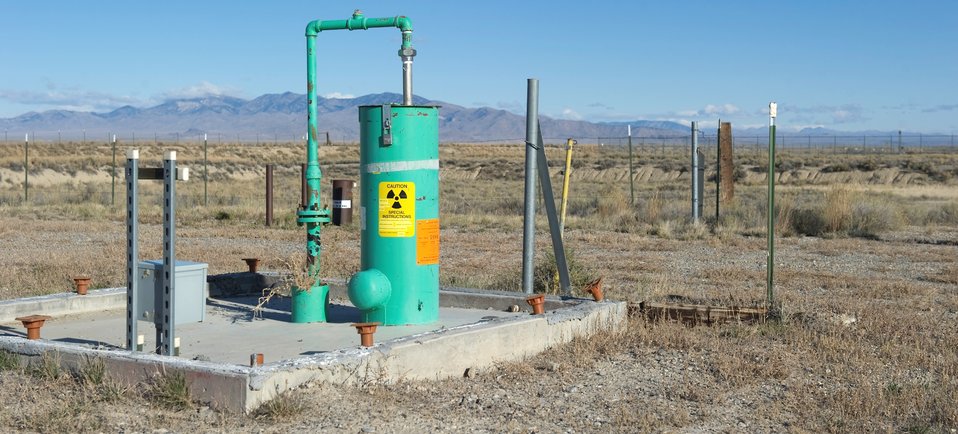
Idaho Site Enlists Whey-Eating Microbes in Groundwater Cleanup

This well is used to inject the protein source — whey powder — for microorganisms in an in situ bio-remediation process.

***
Workers at the Idaho site have enlisted microbes to help remediate previously contaminated groundwater and advance the protection of the Snake River Plain Aquifer.

The microbes in the aquifer are fed a mixture of sodium lactate and whey powder, a common ingredient found in sport protein drinks.

“The microbes eat it, and in the process break down trichloroethylene (TCE). Although TCE is a carcinogen, the end products are harmless,” said Lorie Cahn, environmental lead for Environmental Restoration (ER) and Comprehensive Environmental Response, Compensation, and Liability Act (CERCLA) at CH2M-WG Idaho (CWI), the Idaho site’s main cleanup contractor.